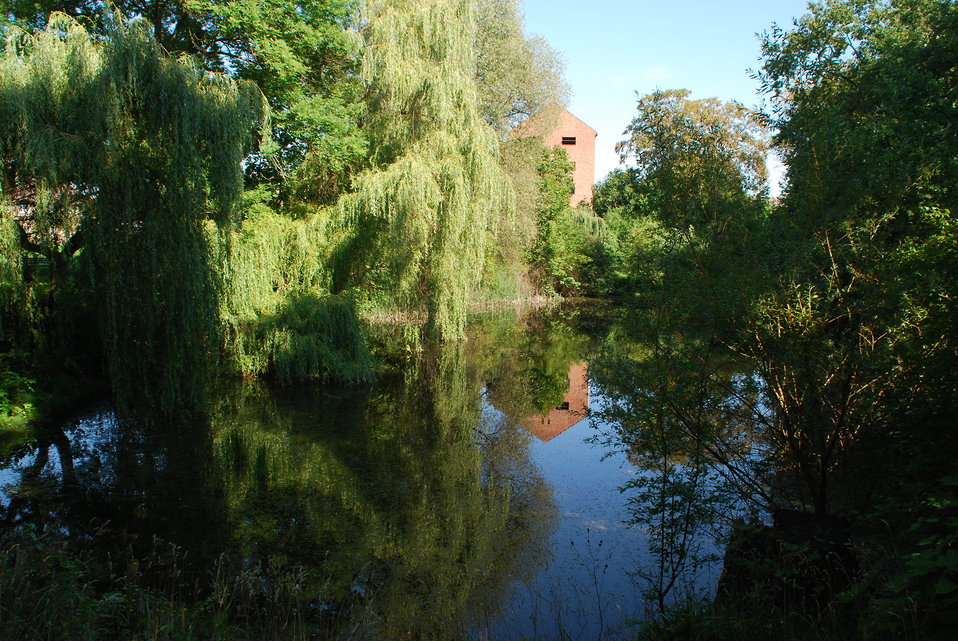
Theaterteich in Frankfurt (Oder), am ehemaligen Kleist-Theater, Friedrich-Ebert-Straße